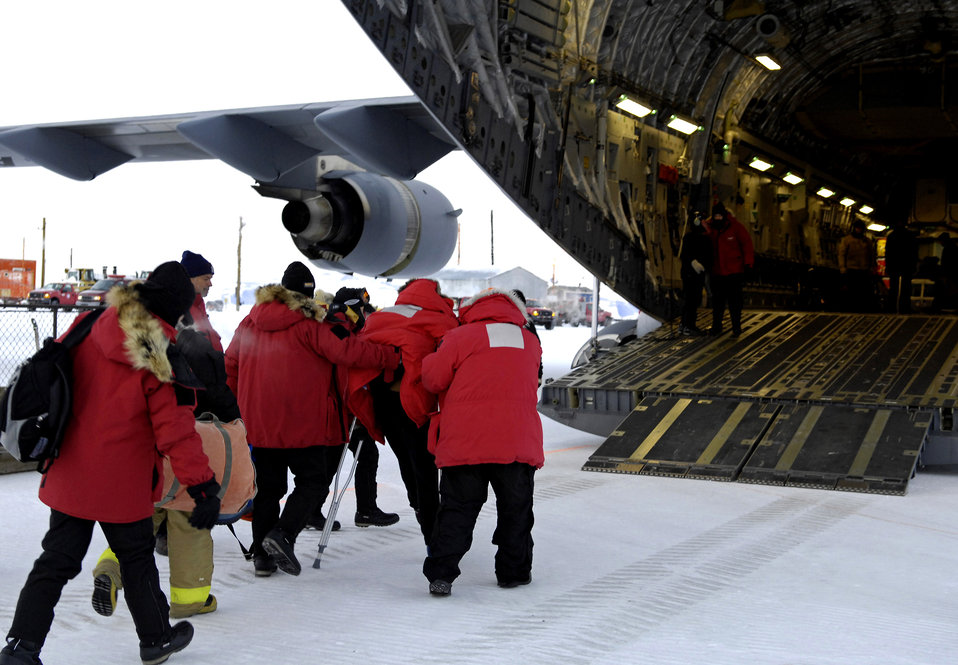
McChord C-17 crew flies medevac mission out of Antarctica

A patient is helped onto a C-17 Globemaster III Aug. 28 at Pegasus White Ice Runway, Antarctica. After completing the Operation Deep Freeze winter fly-in, a C-17 crew turned around 24 hours later and flew a medical evacuation for a patient who required more definitive medical treatment than Antarctica could handle. Also on board was a medical team from the 446th Aeromedical Evacuation Squadron from McChord Air Force Base, Wash.